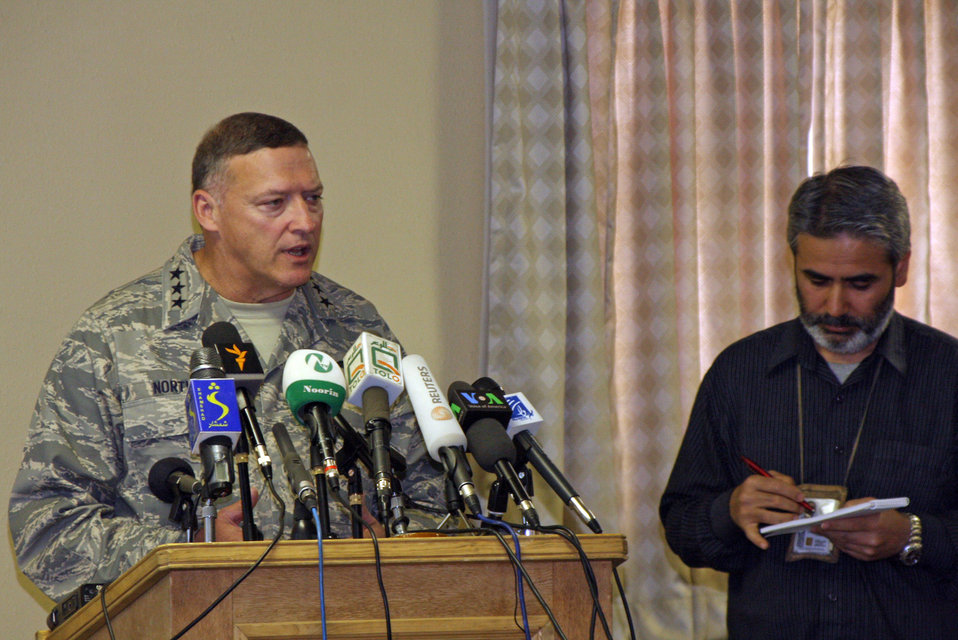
Bagram Media Days

Lt. Gen. Gary North, Combined Forces Air Component commander for Southwest Asia, answers questions from Afghan media at his news conference during